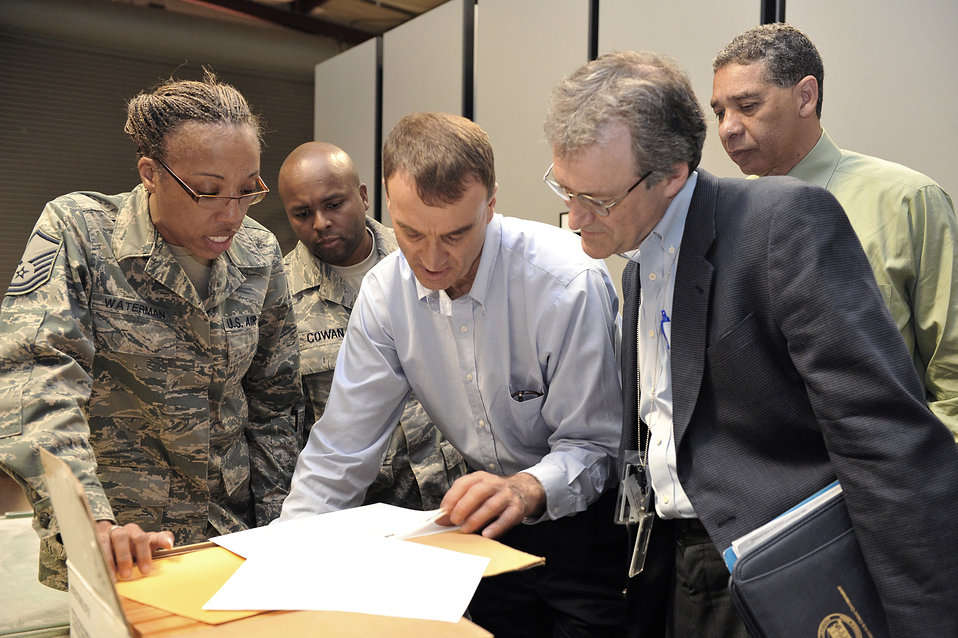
'One of a kind' war records staging facility gets Air Force, national review

Master Sgt. Lenore Waterman (left to right), Tech. Sgt. Charles Cowan, Mike Carlson, Rich Noble and Jerry Phillips look at war records housed in a recently renovated war records storage facility July 1 at Shaw Air Force Base, S. C. Sergeant Waterman is the U.S. Air Forces Central Command records manager. Sergeant Cowan is the AFCENT command staging manager. Mr. Carlson is the supervisory archives specialist for the National Archive and Records Administration. Mr. Noble is the archives specialist for NARA. Mr. Phillips is the Air Combat Command command records manager.